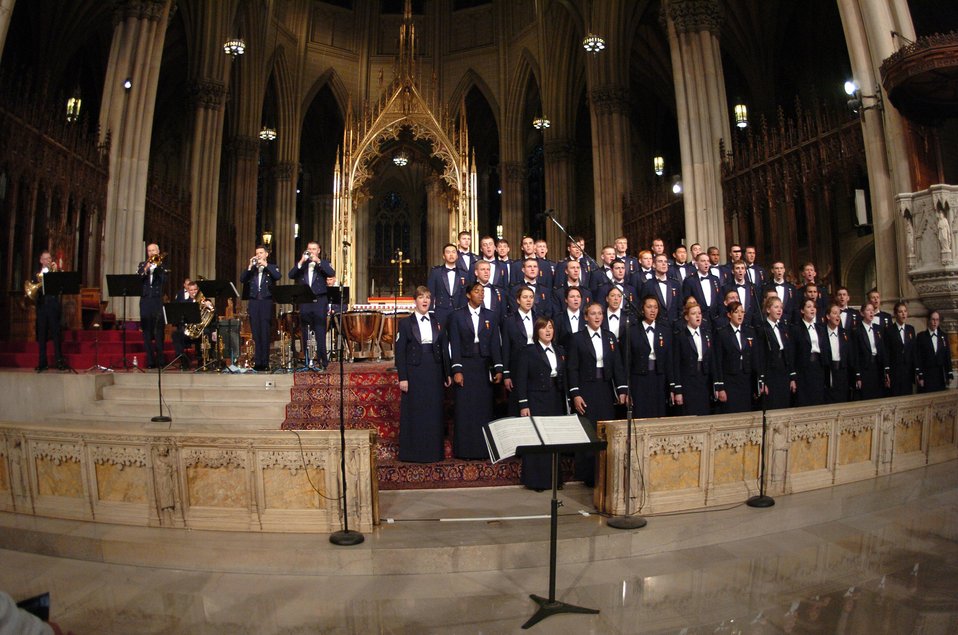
Academy band spreads news in Big Apple

The U.S. Air Force Academy Cadet Chorale and Stellar Brass perform the first movement of